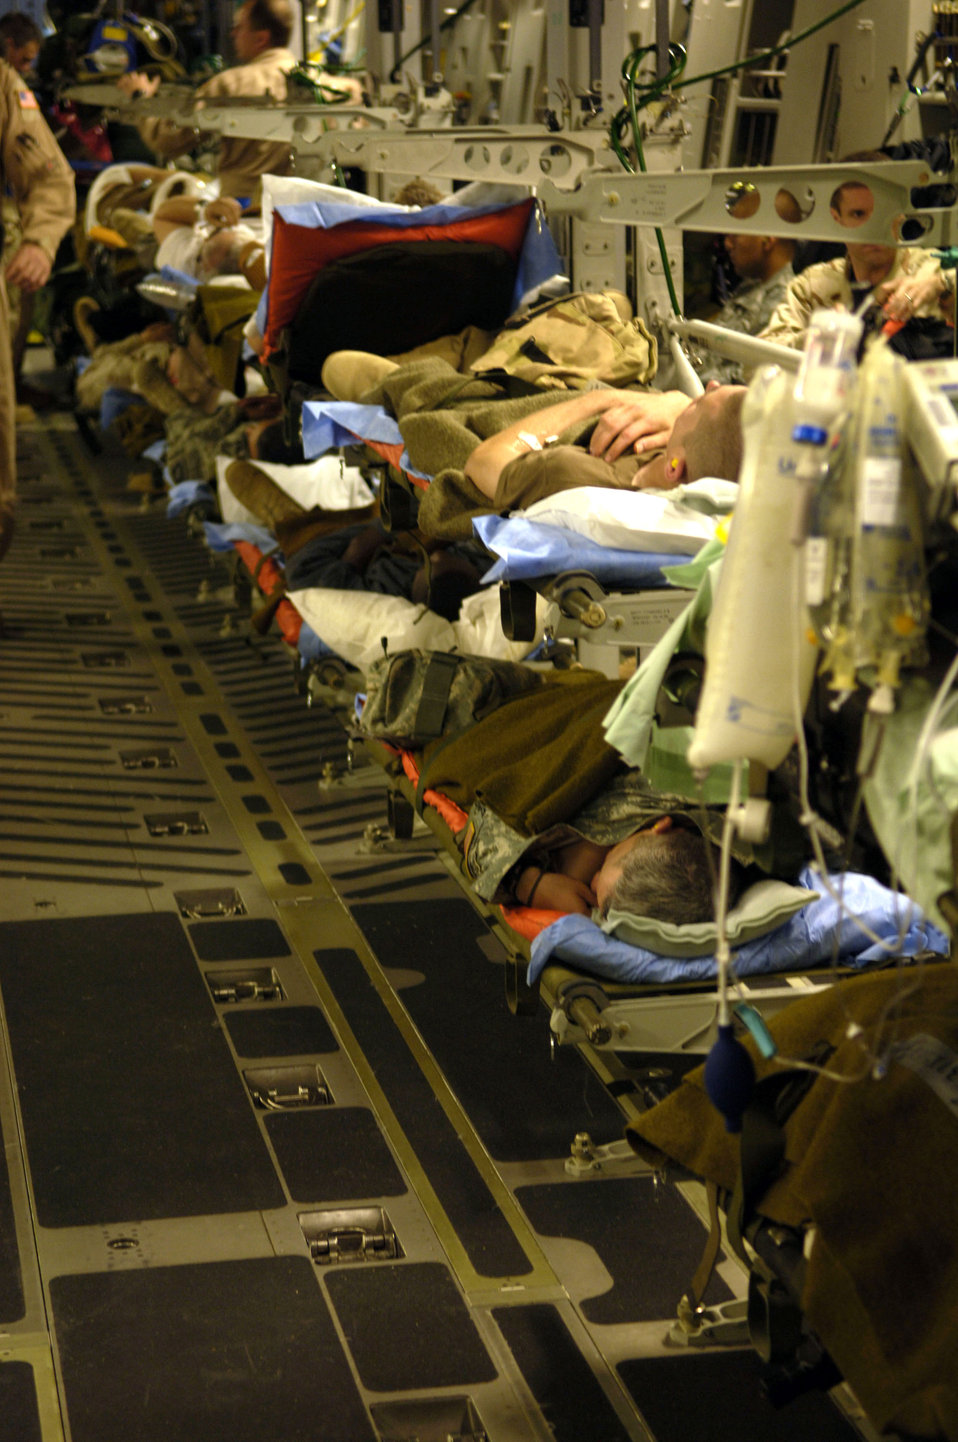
The best care in the air

Final preparations are completed for wounded servicemembers about to be aeromedically evacuated from Balad Air Base, Iraq, on a C-17 Globemaster III on Friday, June 9, 2006.